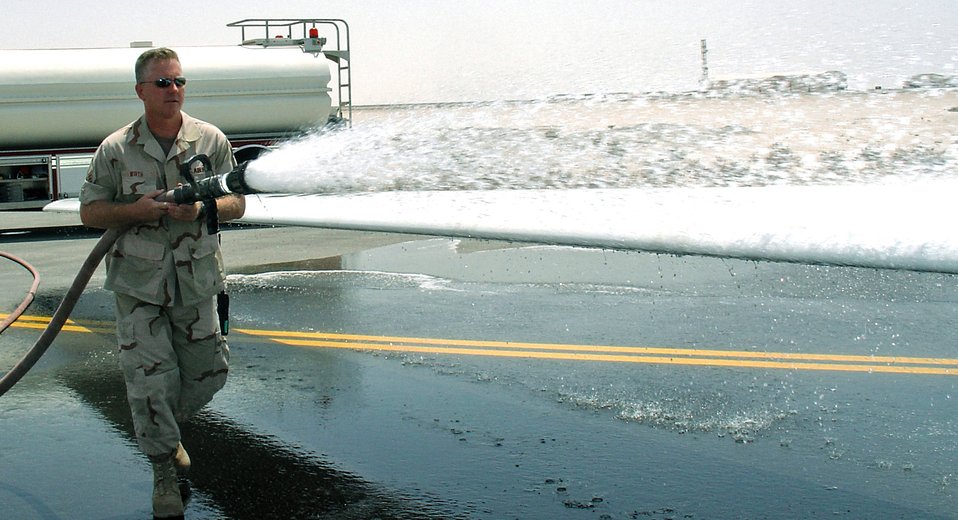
ISR aircraft beat heat

Master Sgt. Kevin Wirth hoses down the wing of a Global Hawk in an effort to cool it off. The Global Hawk and U-2 aircraft at this deployed location in Southwest Asia provide critical intelligence, surveillance and reconnaissance and in order to be efficient and effective, the technological sensors on these aircraft cannot be subjected to heat for extended periods of time. Sergeant Wirth is with the 380th Expeditionary Civil Engineer Squadron.